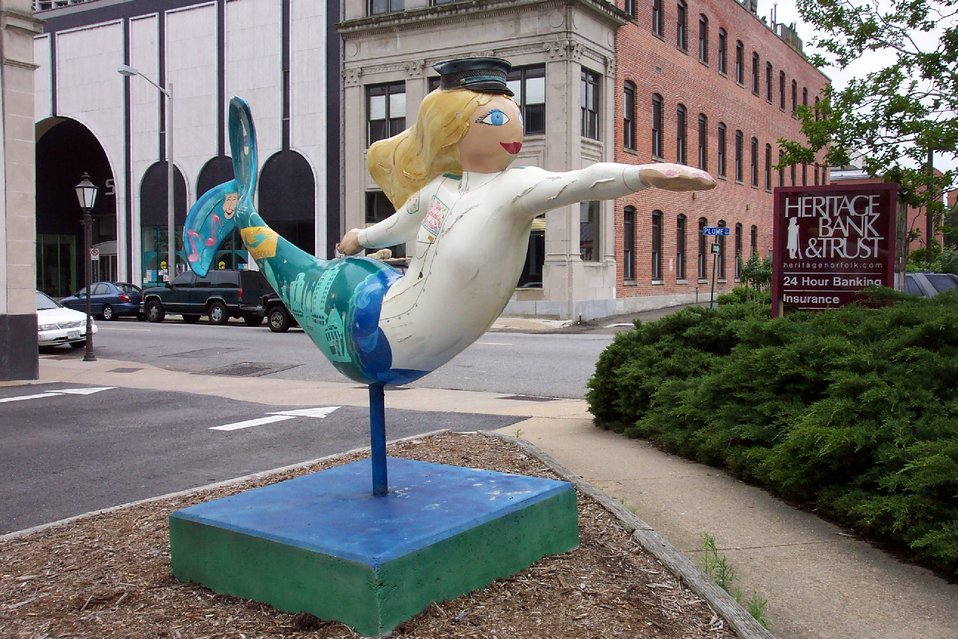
'Miss 'Definitely' Downtown. A Norfolk mermaid.